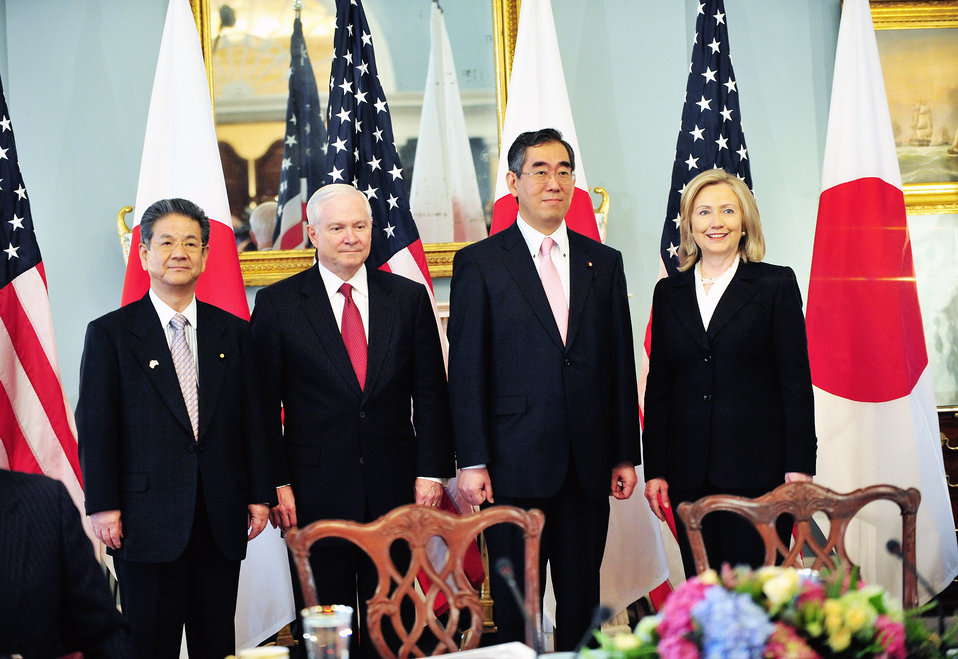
Secretary Clinton, Japanese Foreign Minister Matsumoto, Secretary Gates, and Japanese Defense Minister Kitazawa Pose for a Photo

U.S. Secretary of State Hillary Rodham Clinton, right; Japanese Foreign Minister Takeaki Matsumoto; center right; U.S. Secretary of Defense Robert Gates, center left; and Japanese Defense Minister Toshimi Kitazawa, left; pose for a photo after the U.S.-Japan Security Consultative Committee meeting, known as the 2 2, at the U.S. Department of State in Washington, D.C., on June 21, 2011.